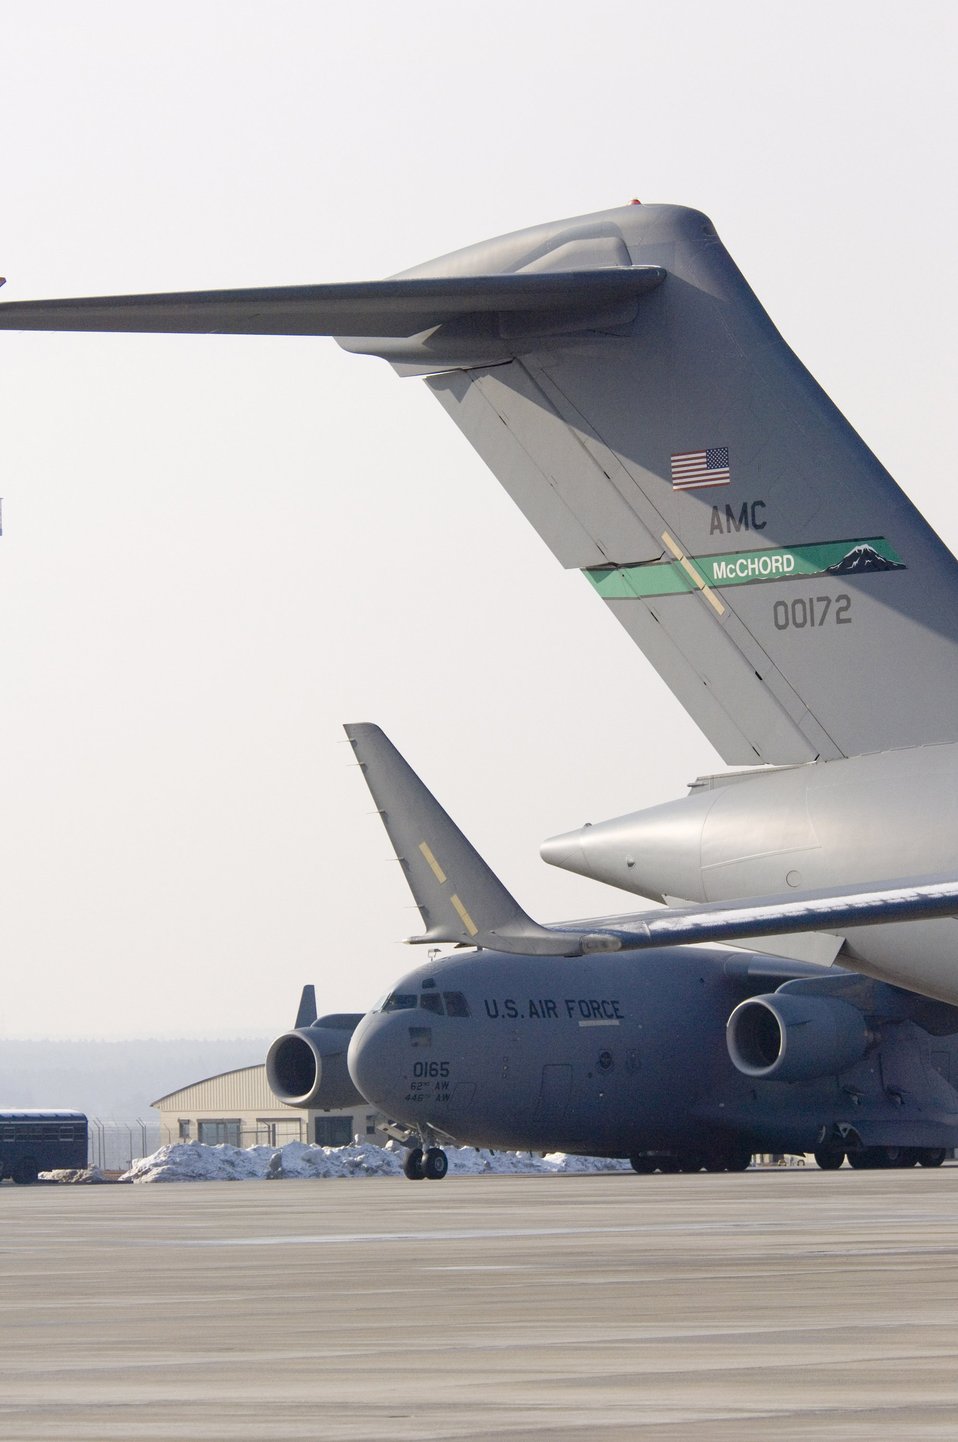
Airlift Gas-n-Go

A C-17 Globemaster III joins other heavy air transports at Spangdahlem Air Base, Germany, Wednesday, March 22, 2006. The transports, both from McChord Air Force Base, Wash., will receive services from Spangdahlems 726th Air Mobility Squadron.